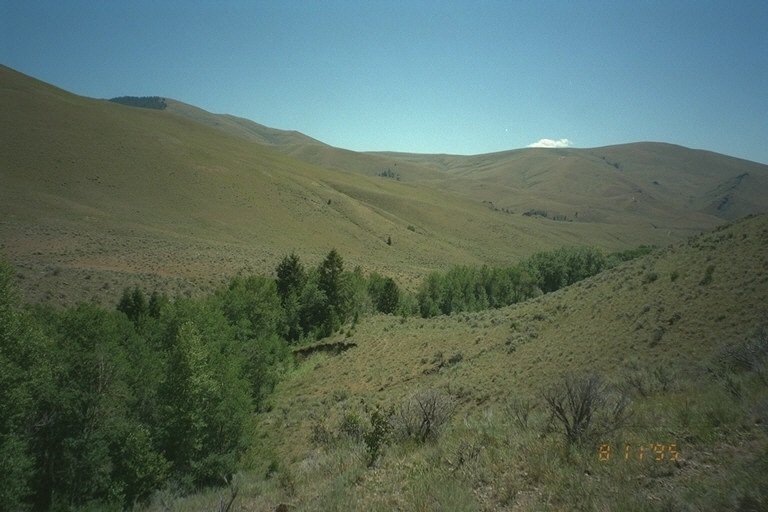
Riparian area Public Lands Salmon Field Office UCSC Upper Columbia Salmon Clearwater District